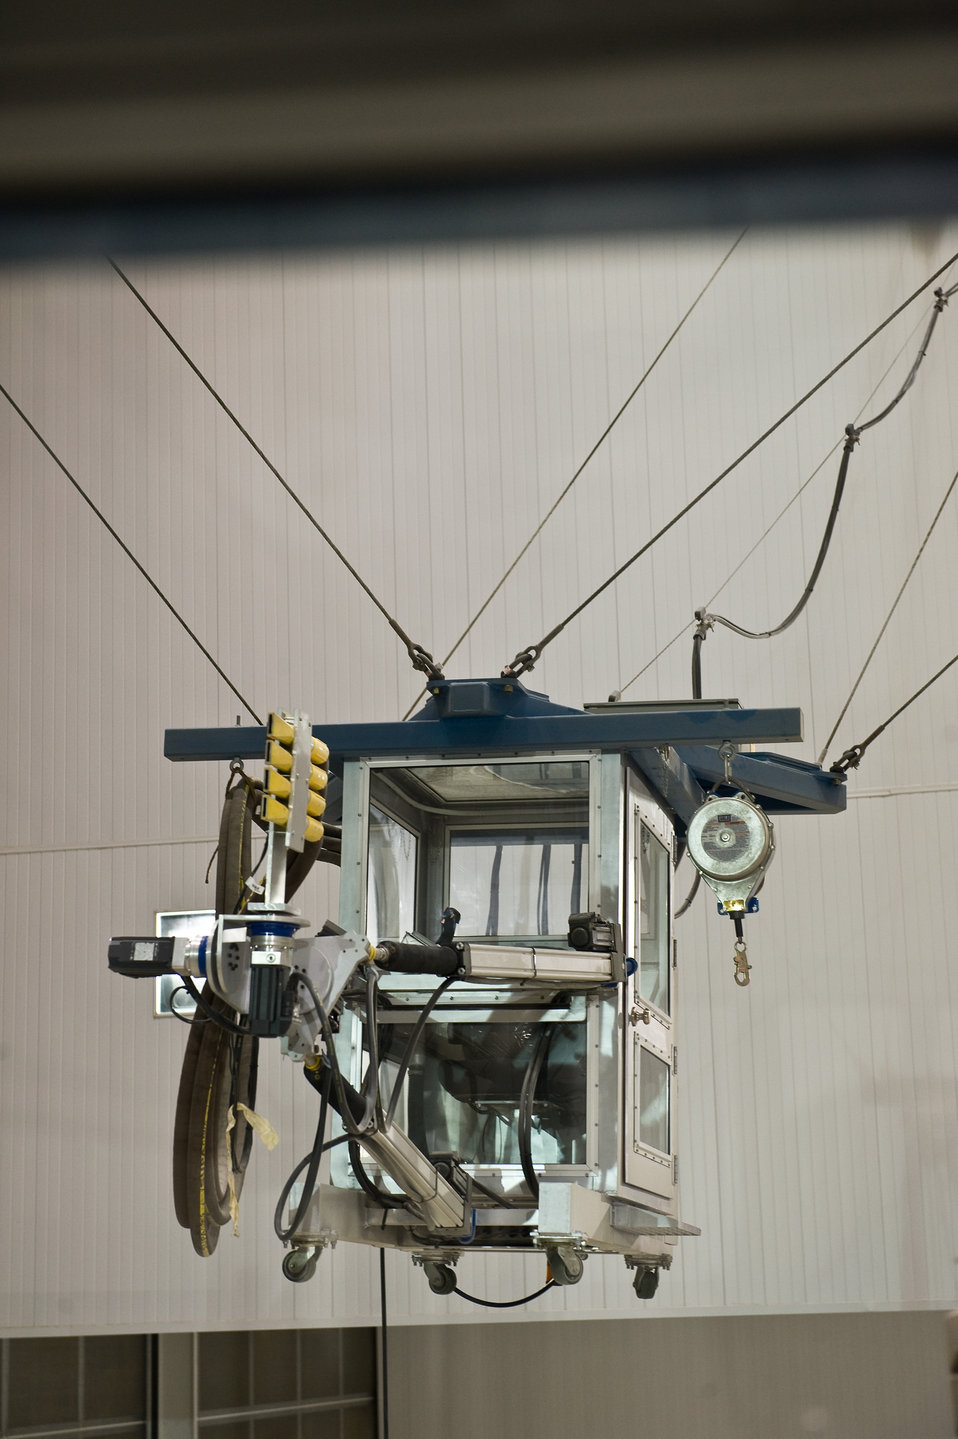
Depaint the big easy way

One of the four Area Multi-axis Platforms, or AMPs, that depaint C-130 Hercules aircraft at the 402nd Maintenance Support Squadron at Robins Air Force Base, Ga. A foreman operates the AMP from inside a cab that has fresh air pumped in for him to breathe and to push plastic beads and paint particles out of cab openings. The systems can be remotly positioned with a handheld wireless control.